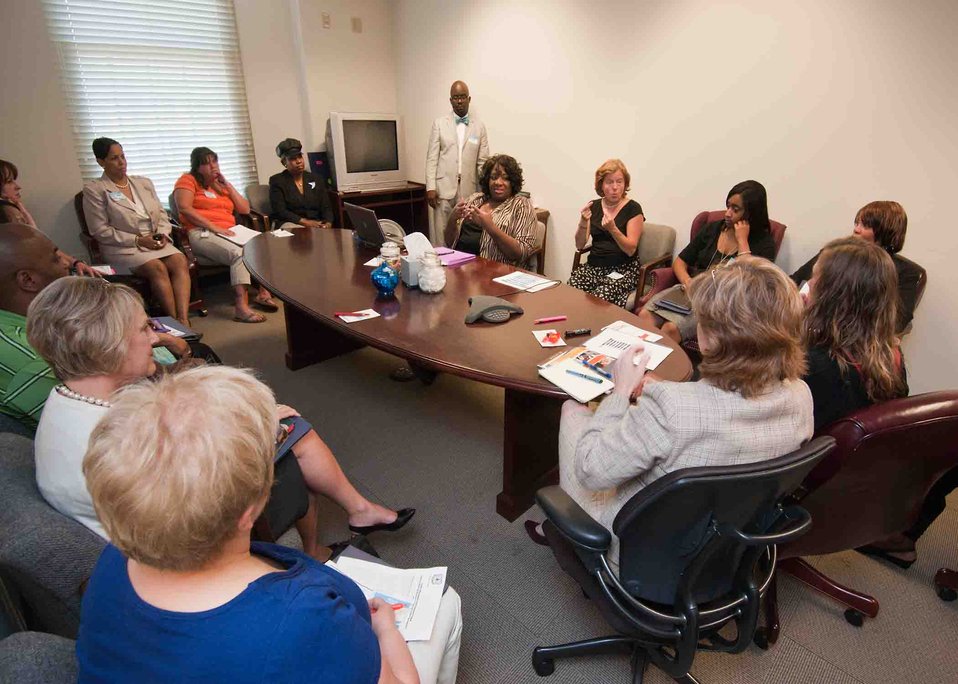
Acting Director, Office of Civil Rights, Early Resolution and Conciliation Division Shelia Wolcott chaired an open house and training workshop for employees and supervisors at the United States Department of Agriculture (USDA) in Washington, DC, Wednesday, Jun. 15, 2011. The primary goal of the workshop was to strengthen the Alternative Dispute Resolution (ADR) community through outreach, training and partnership with agencies in USDA and make employees aware of ADR.